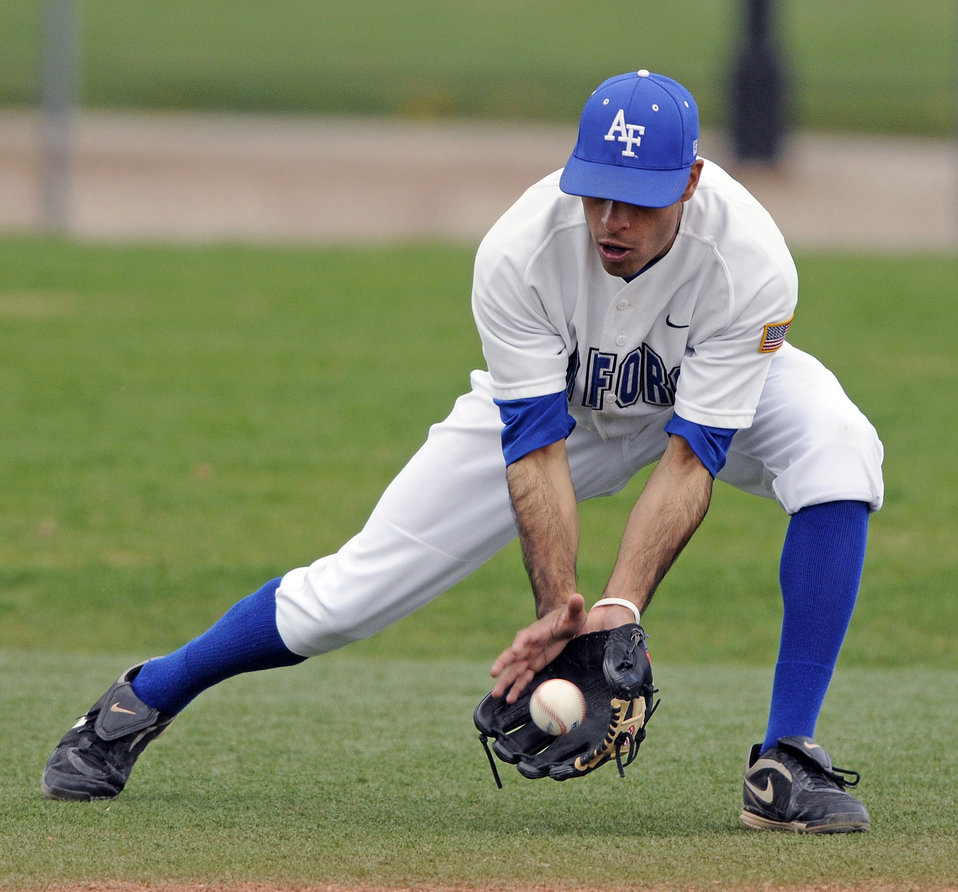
Baseball season ender

Air Force Academy junior shortstop K.J. Randhawa scoops up a grounder during a two-game series with the University of New Mexico Lobos. The Falcons lost both games, and finished the season with a 14-37 overall record.